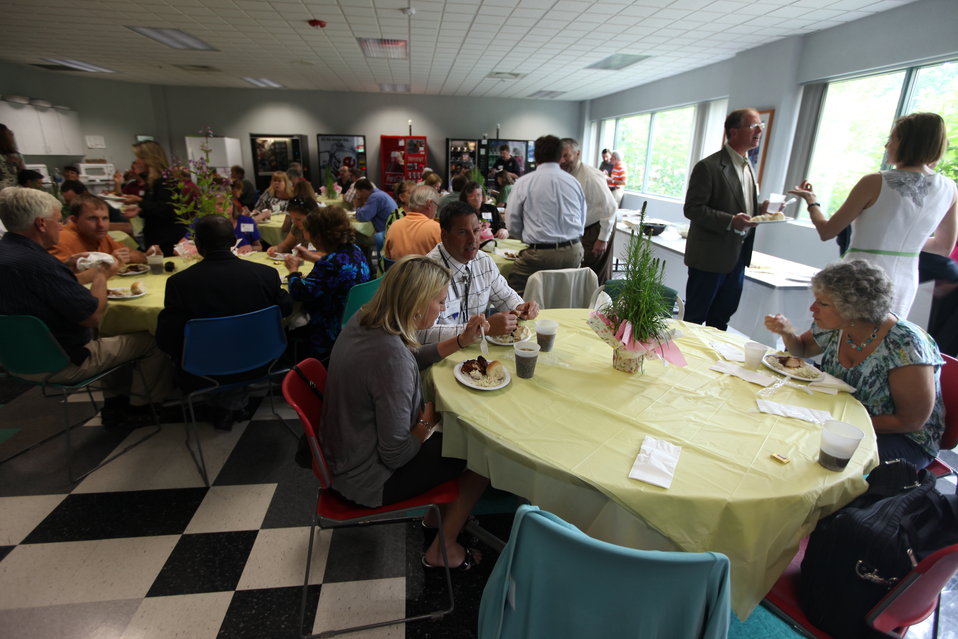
Northeast Region Employee Appreciation Awards

Luncheon